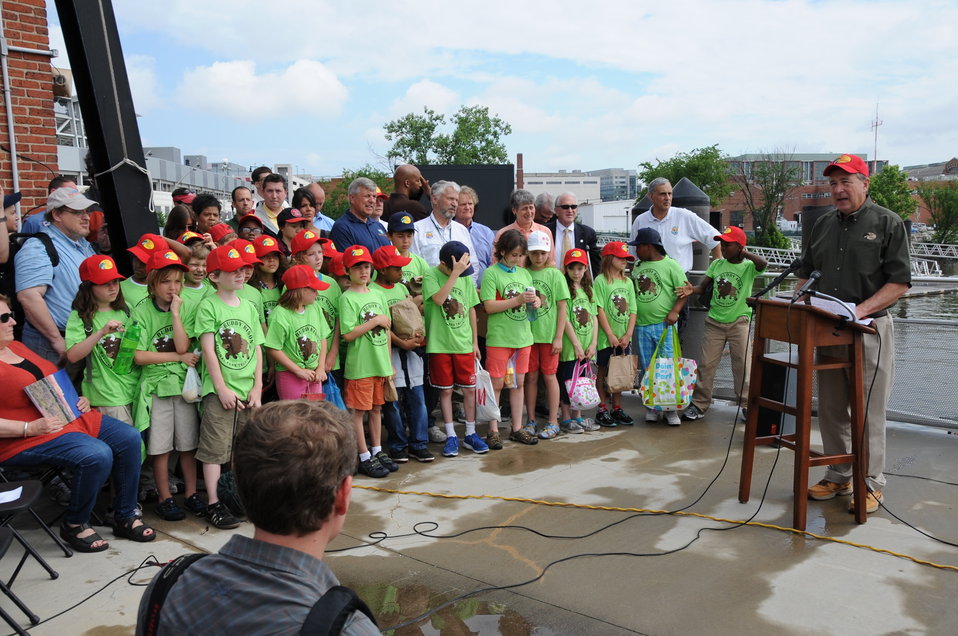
2013 National Fishing and Boating Week

Local students prepare to enjoy fishing at the annual kick-off of National Fishing and Boating Week on the Anacostia River in Washington D.C.